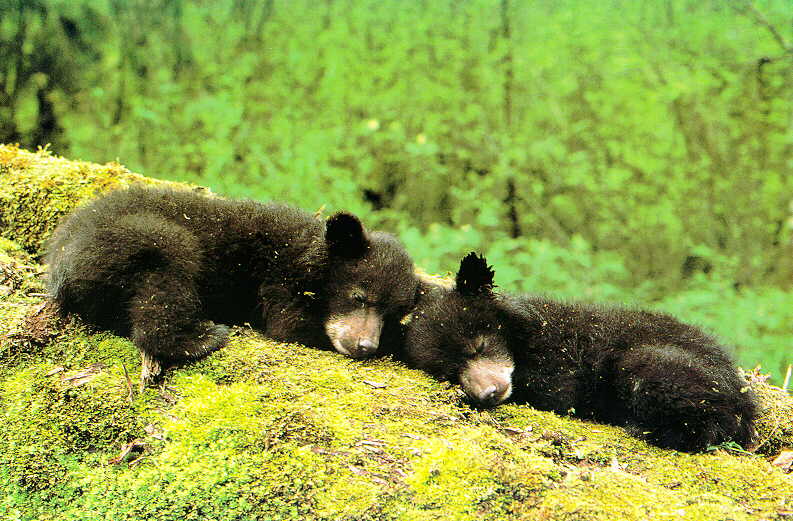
nap time

Two black bear cubs nap on a mossy rock.